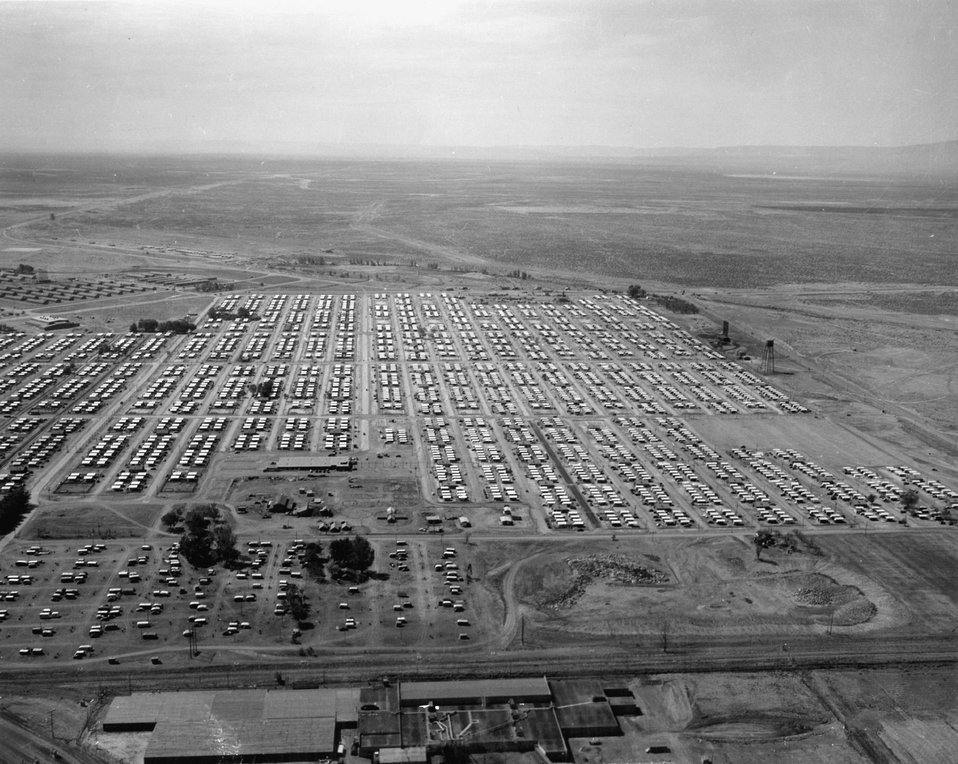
Trailer park at the Hanford townsite. c. undated